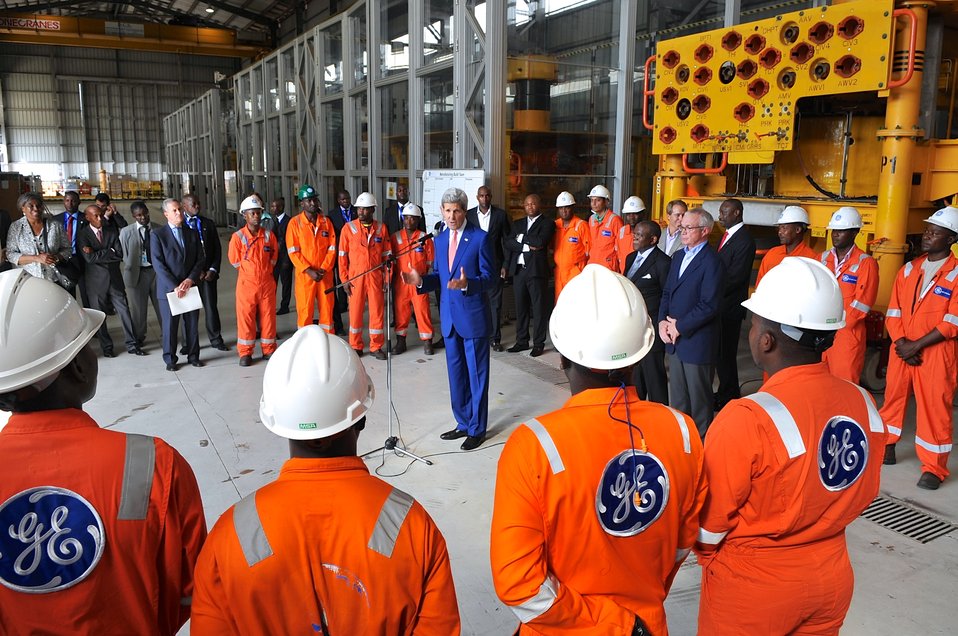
Secretary Kerry Addresses Workers at GE Facility in Angola

U.S. Secretary of State John Kerry addresses workers and local media after touring a General Electric facility in the Sonil oil services compound in the Port of Luanda, Angola, on May 4, 2014.